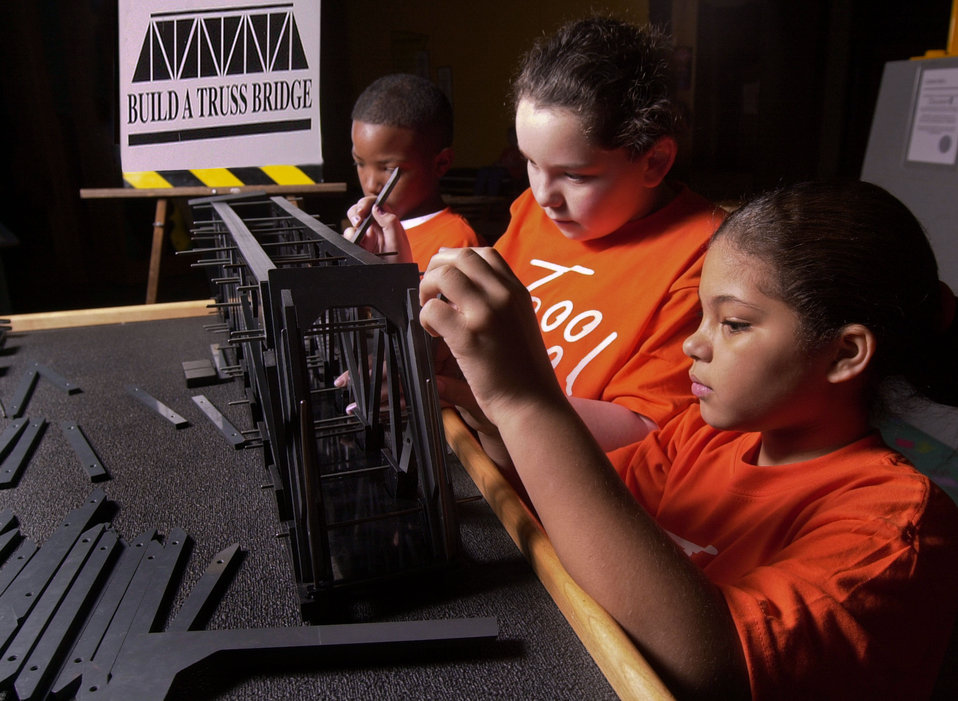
Discover E exhibit at American Museum of Science and Energy Oak Ridge

00-0013-2 DOE photo by Lynn Freeny

Discover E exhibit at American Museum of Science and Energy Oak Ridge Tennessee Feb. 2000